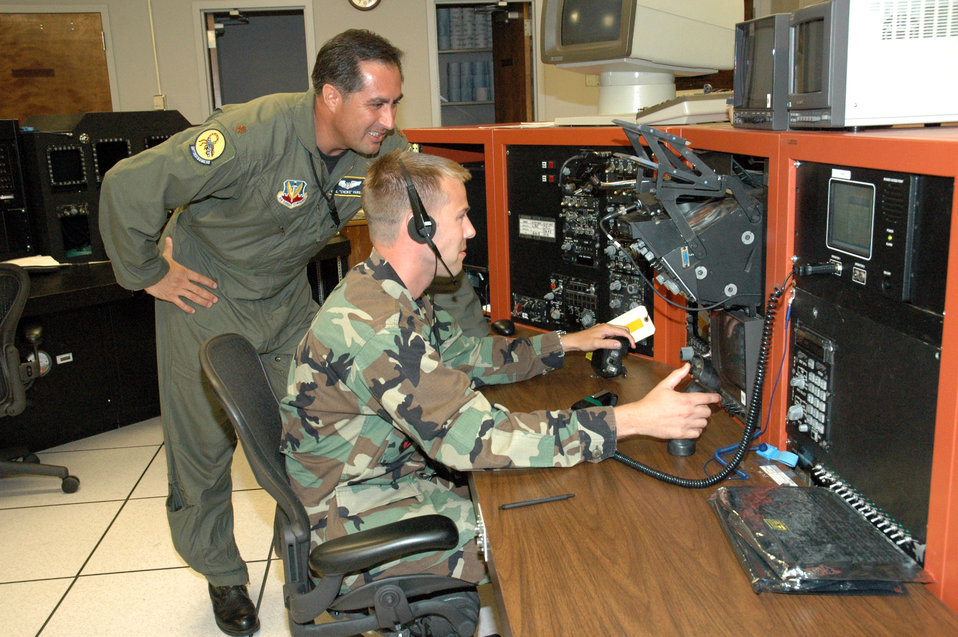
Engineers go beyond virtual reality to test systems

Maj. Raul Parra watches 2nd Lt. Will Dalton, an F-15 Eagle avionics engineer, operate the F-15C console at Tyndall Air Force Base, Fla. Major Parra is director of operations at the Integrated Avionics Test Facility of Detachment 2, 28th Test and Evaluation Squadron.